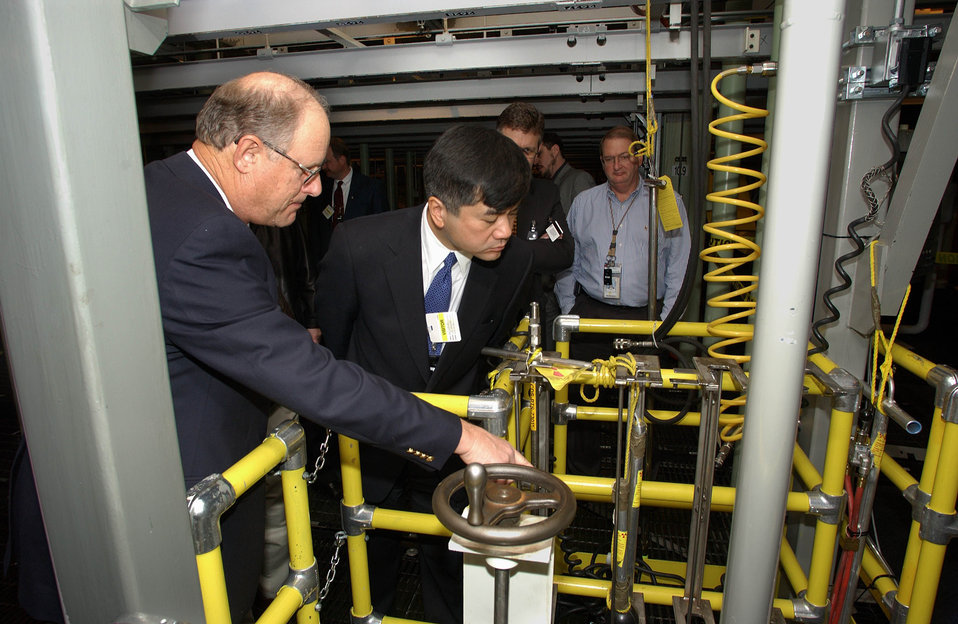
Former Washington Governor Locke visits Hanford in 2002